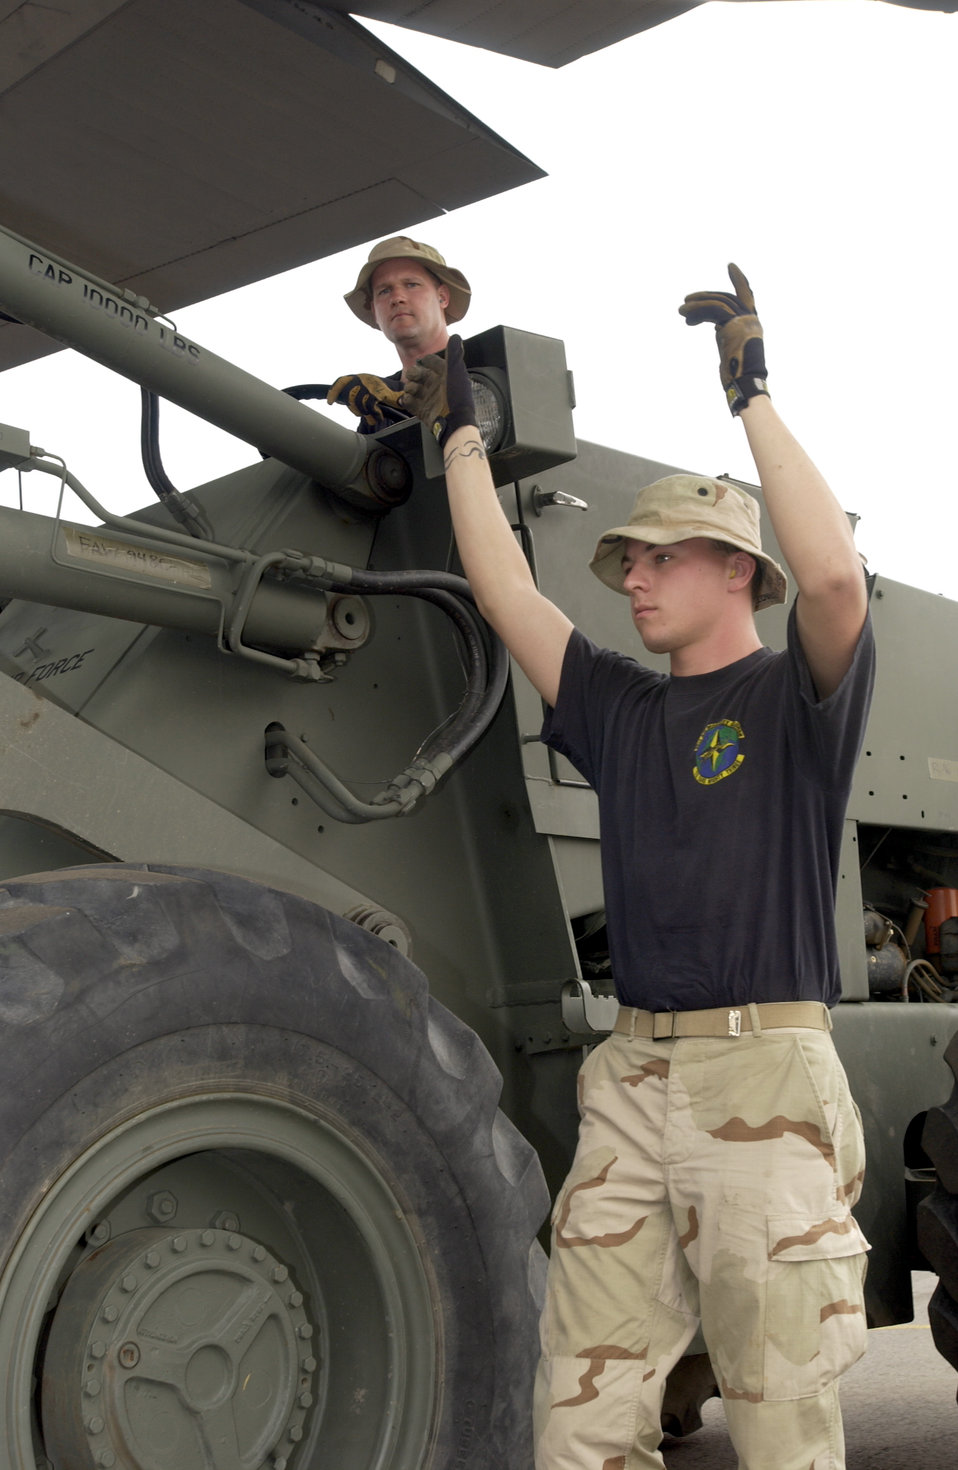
Out of Africa

ATAR AIRPORT, Mauritania -- Staff Sgt. Mitchell Atkins (right) directs load positioning as Tech. Sgt. Jeffery Smith loads the cargo onto a C-130 Hercules. Both Airmen are aerial porters from the 86th Contingency Response Group. They were part of a mission-support team responsible for pulling Soldiers from Africa who were working on the Pan Sahel Initiative. The Soldiers trained the African military in force protection, border patrol and anti-terrorism tactics.